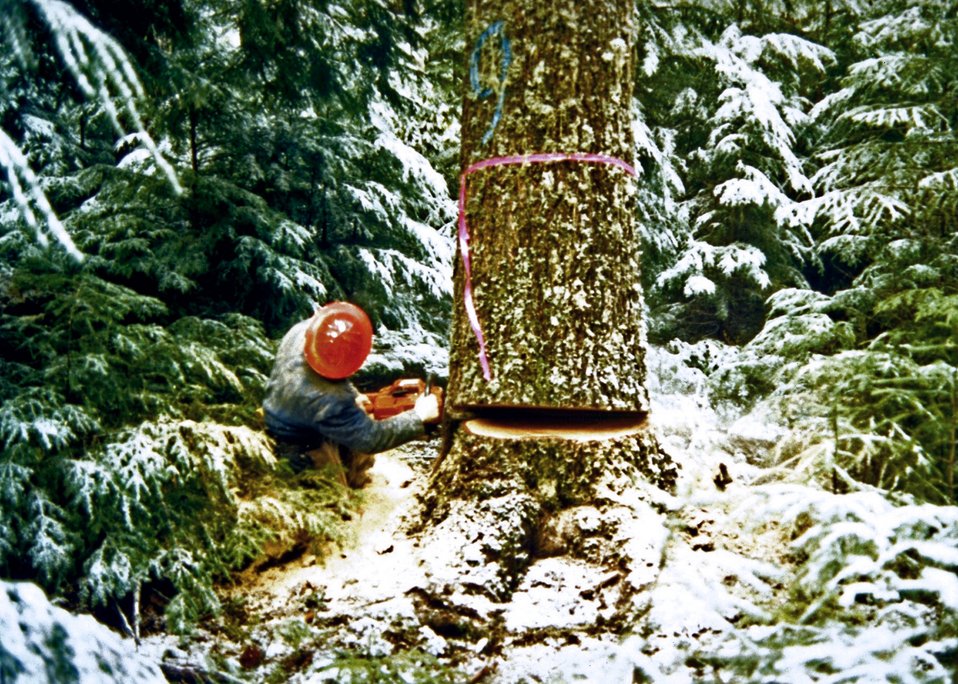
3-P Fallers at Buyer's Deadhorse Timber Sale.